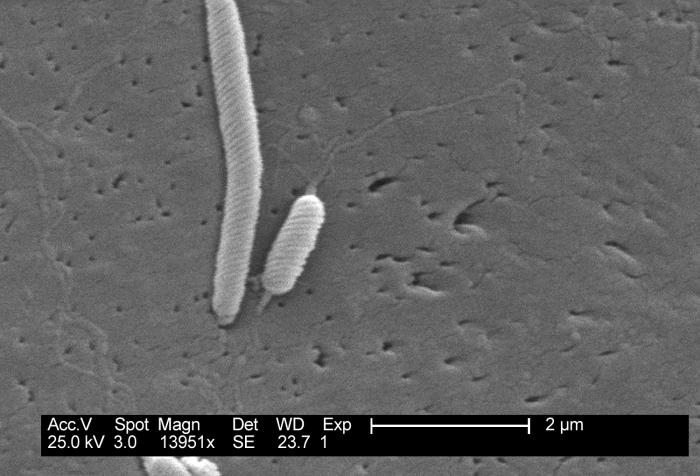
This scanning electron micrograph depicts two Flexispira rappini bacteria, magnified 13,951x.